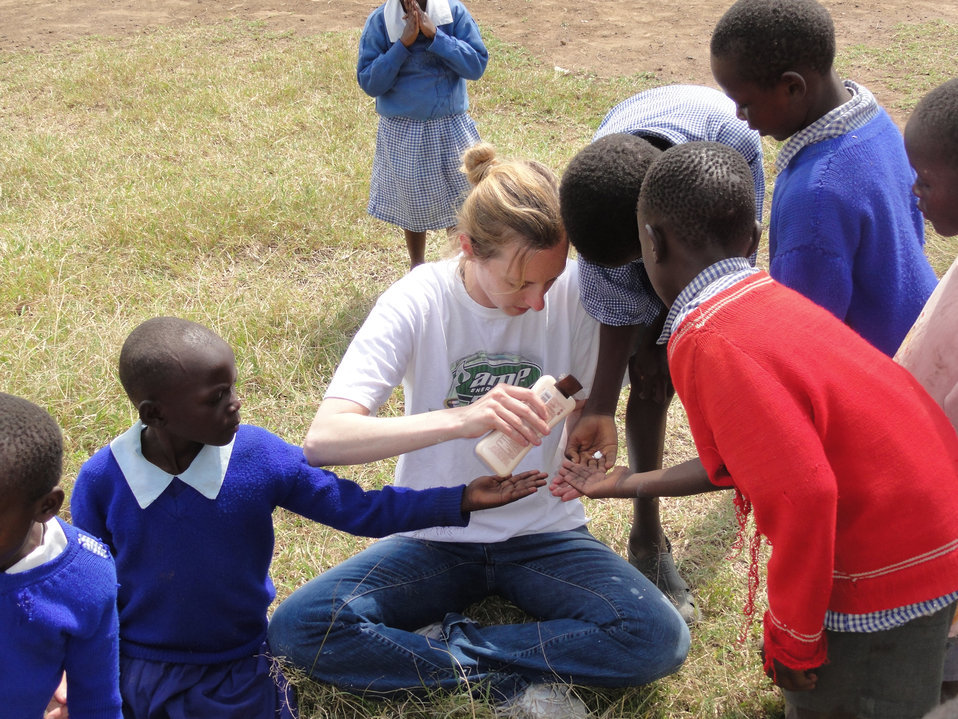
African Service

Capt. Julie Gration takes a break from completing renovations on a schoolroom to play with some of the children at the Hope for Life Orphanage in Nakuru, Kenya. Hope for Life is an orphanage for children who have lost parents to AIDS. Captain Graion is a Reservist with the 477th Fighter Group. Captain Gration is assigned to the 477th Fighter Group at Joint Base Elmendorf-Richardson, Alaska.